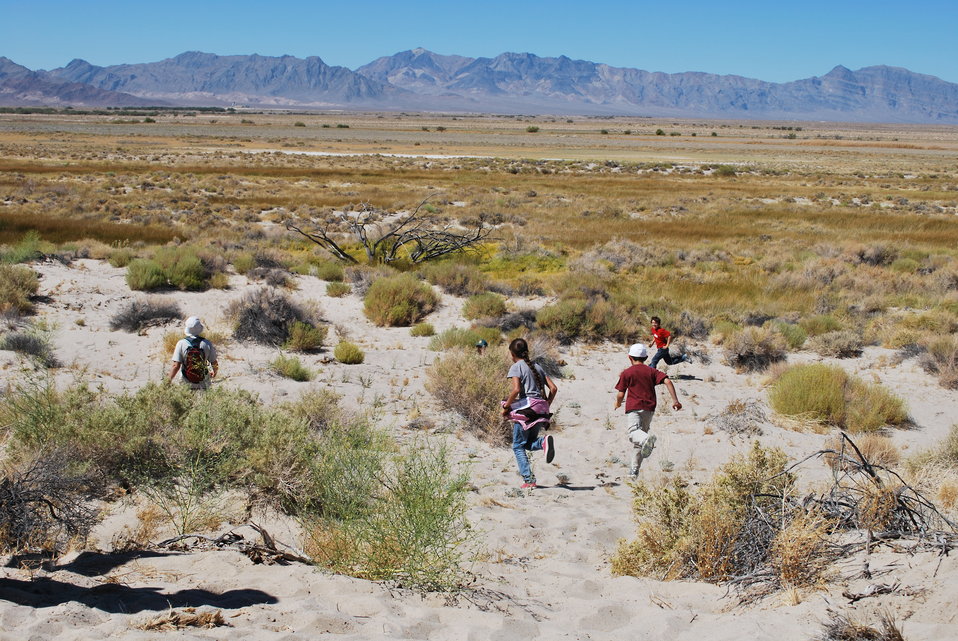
Exploring the sand dunes.

Kids run across the sand dunes at Ash Meadows National Wildlife Refuge to play a game about predators and prey. Stephanie Kyriazis/USFWS photo, 9-11-2010.